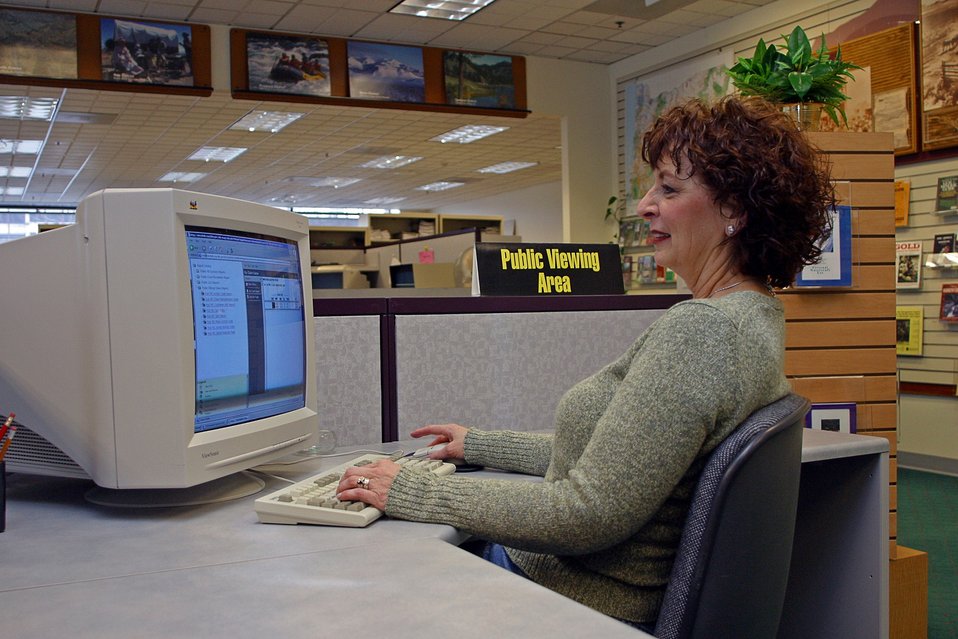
BLM's Land Office provides information about land status, minerals, maps, and general information to the public.